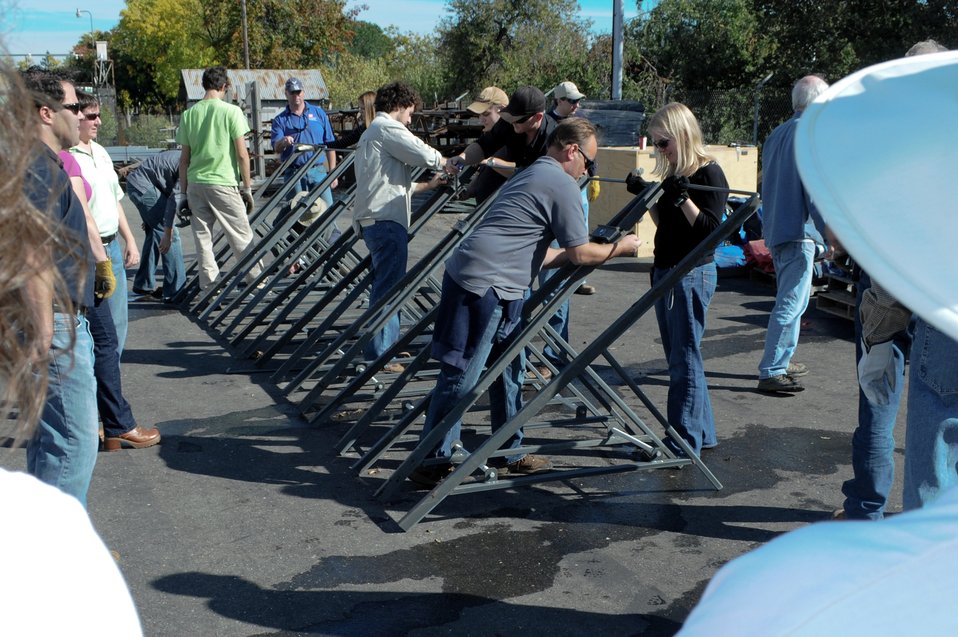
WEST SACRAMENTO, Calif. (Nov. 03, 2010) – Employees from the U.S. Army Corps of Engineers Sacramento District assemble portable flood-water barriers during a product demonstration at a Corps facility here Nov. 3. The series of interlocking metal A-frames (pictured from right to left) are able to be deployed in flood waters, form a barrier when covered with a weighted tarp, and then pump water from one side to the other. The metal frames and tarps were one of three new products being tested by Corps employees for future use in emergency and disaster operations.